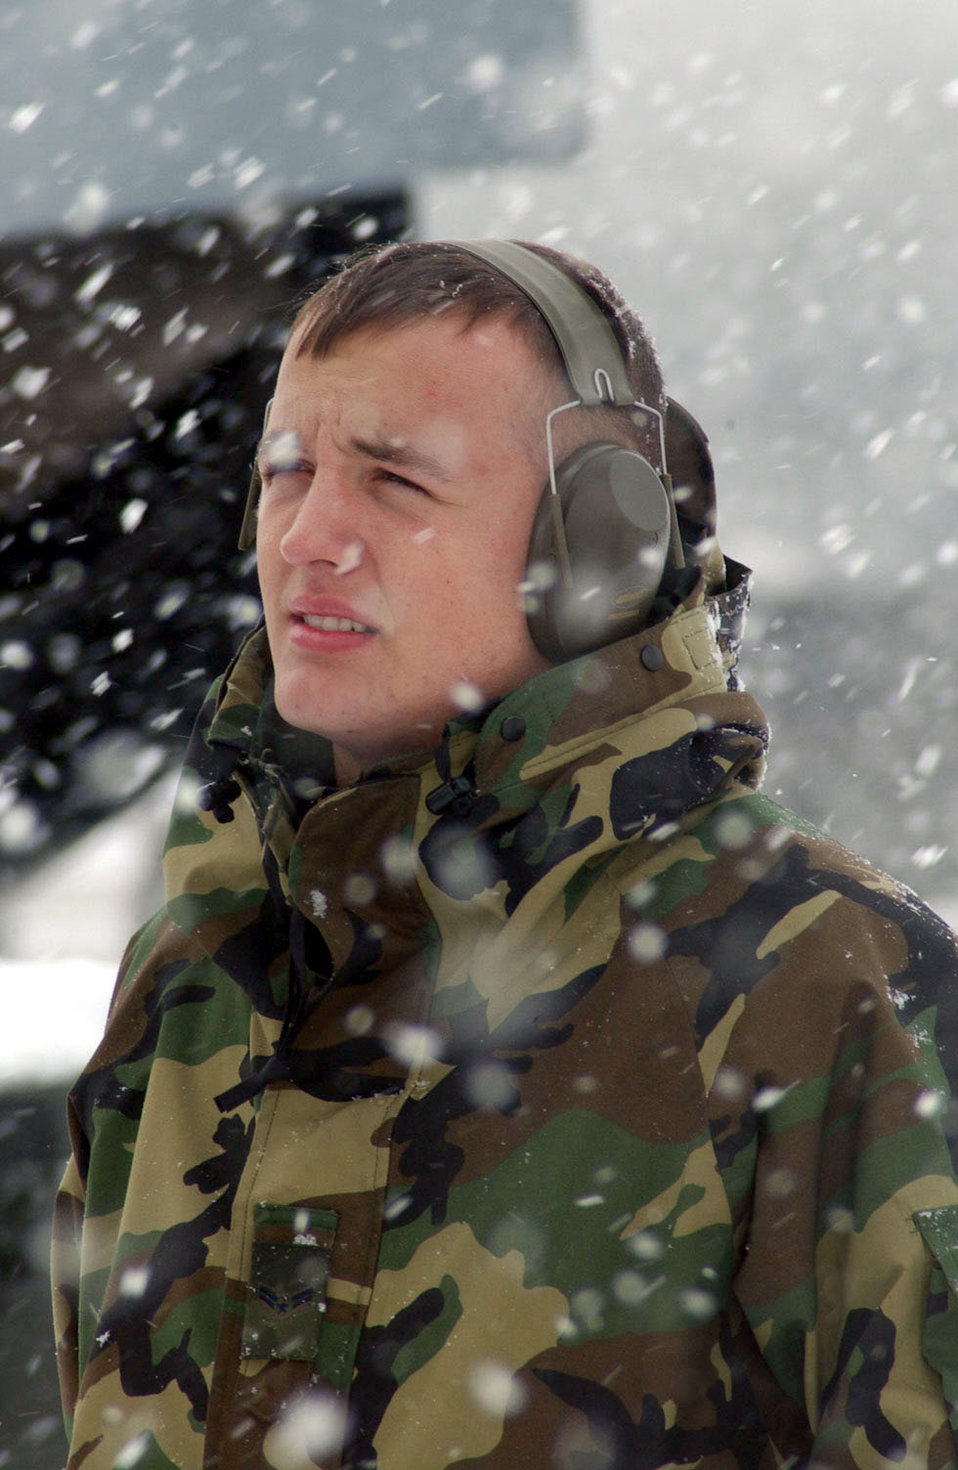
Deploying to snow

KWANG JU AIR BASE, South Korea -- Another round of snow pelts Airman 1st Class Robert Perry and other airmen from Kadena Air Base, Japan, during a four-day deployment here. Airman Perry is assigned to the 718th Aircraft Maintenance Squadron.